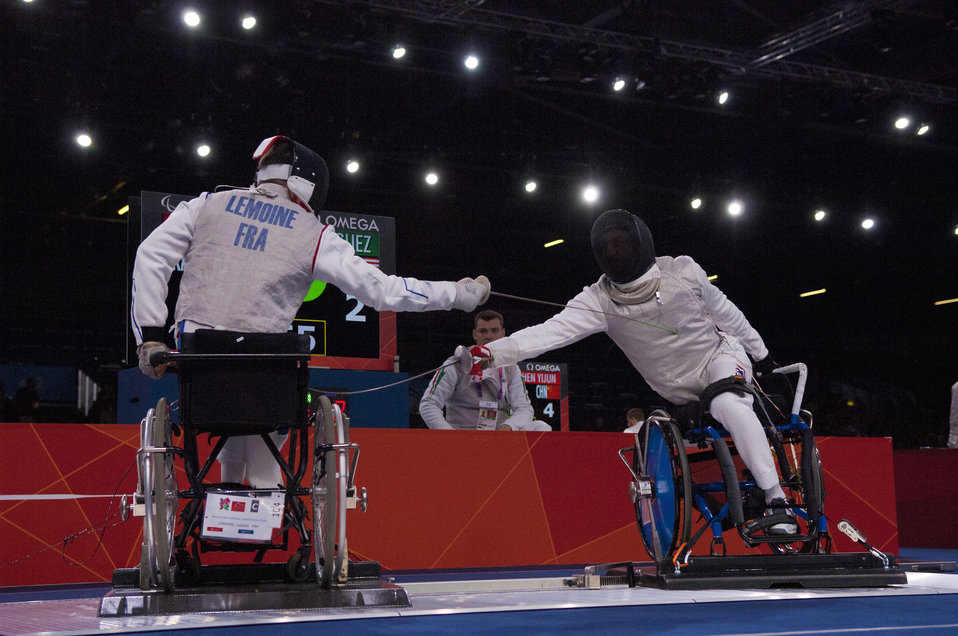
af veteran fencer

Former Air Force Staff Sgt. Mario Rodriguez, right, a member of the 2012 U.S. Paralympic fencing team, engages France's Ludov LeMoine during a bout at London's ExCel Centre during the Paralympic Games, Sept. 4, 2012.